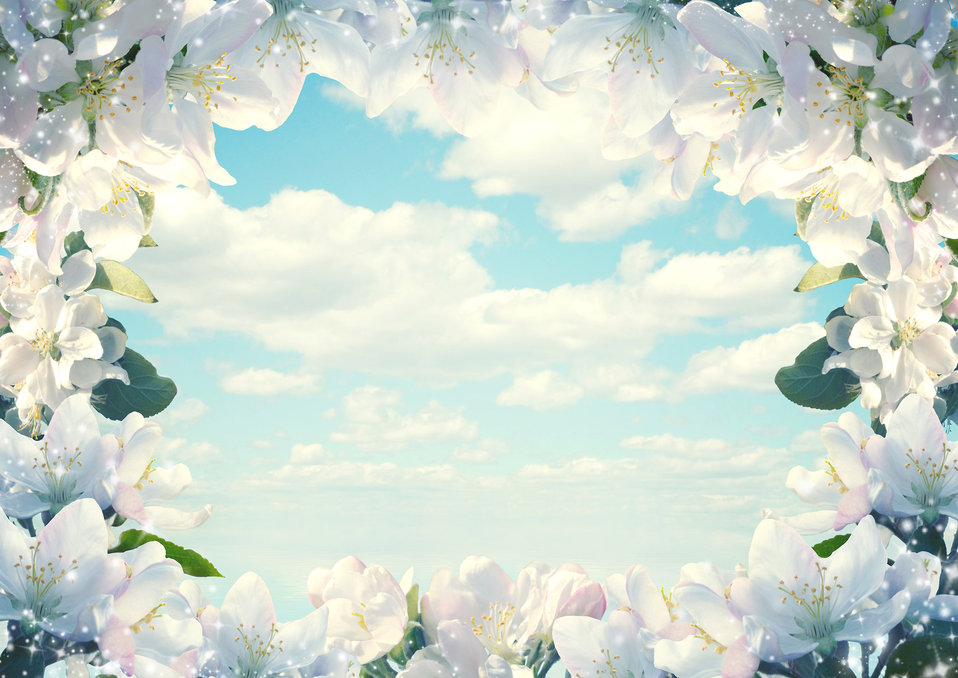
Frame of flowers on apple tree against a beautiful sky.